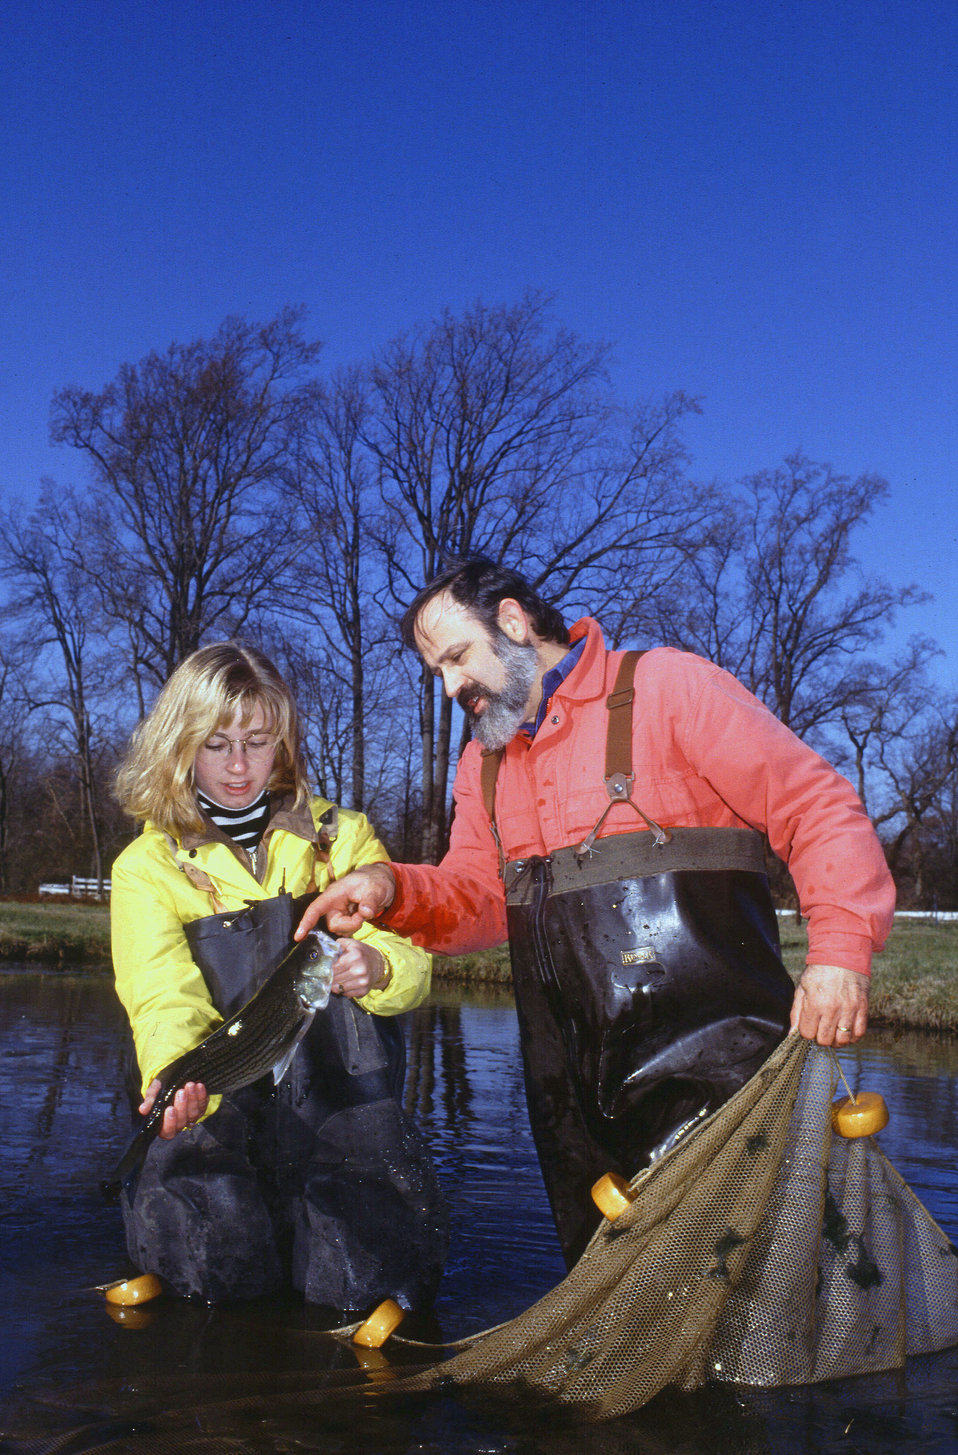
U.S. Department of Agriculture (USDA) Agricultural Research Service (ARS) research assistant professor Bernard Petrosky points out the qualities of a pond-raised hybrid striped bass to Delaware State University fisheries science student Jean Staats.